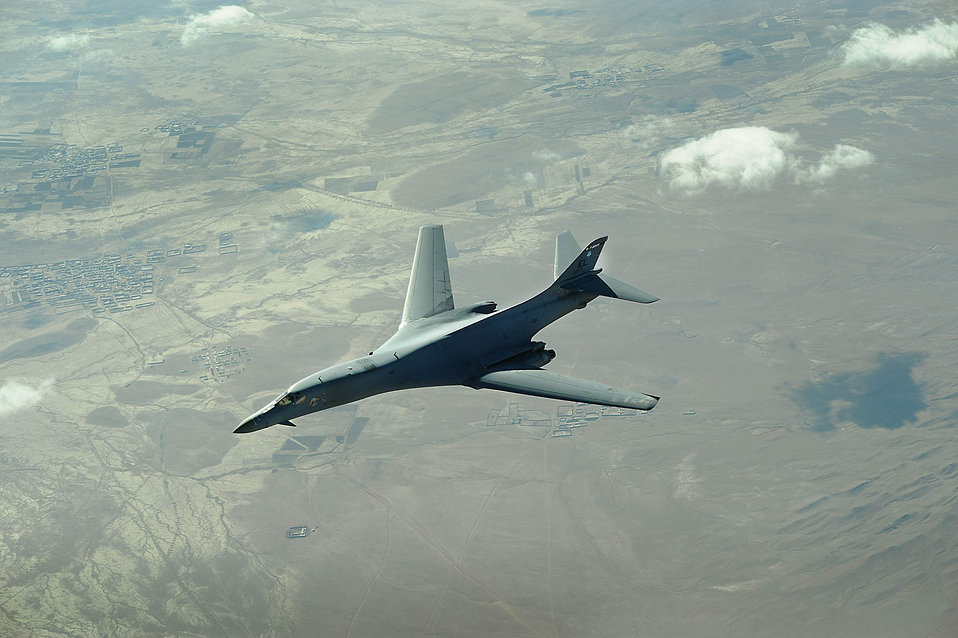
B-1 Lancer

Air Force officials are considering High Velocity Maintenance, or HVM, at Tinker Air Force Base, Okla., for the B-1B Lancer such as this one flying a mission over Afghanistan. If HVM is approved, it will be significant change in how the Air Force maintains its aircraft. HVM provides a fix before something breaks through a more comprehensive analysis of each aircraft.